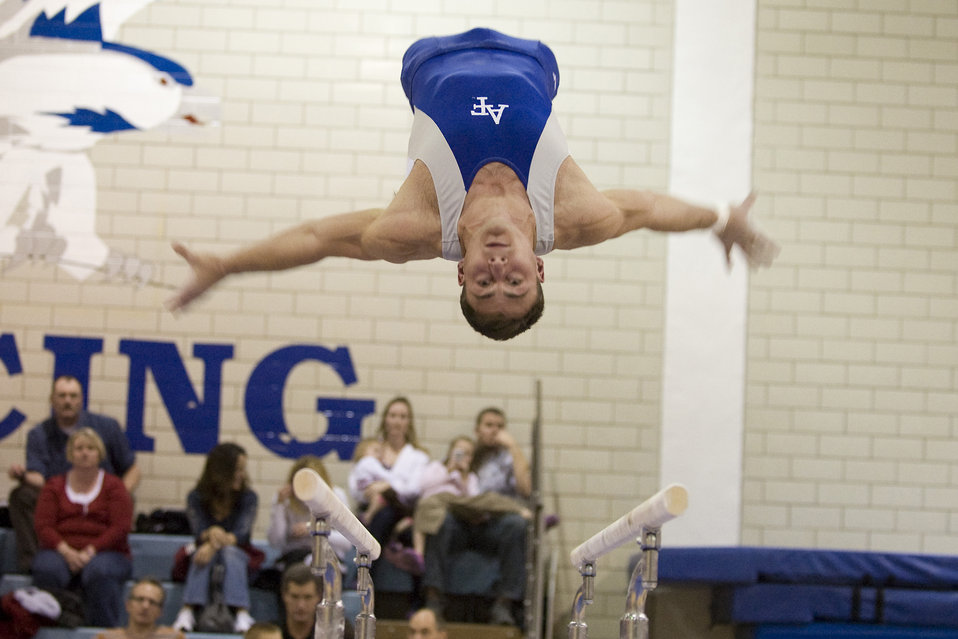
Falcons open season with Rocky Mountain event

Cadet junior Matthew Thorne performs on the parallel bars during the Rocky Mountain Open meet held in the field house at the U. S. Air Force Academy, Colo., Jan. 16, 2010. This was the first meet of the season hosted by the 14th-ranked Falcons.